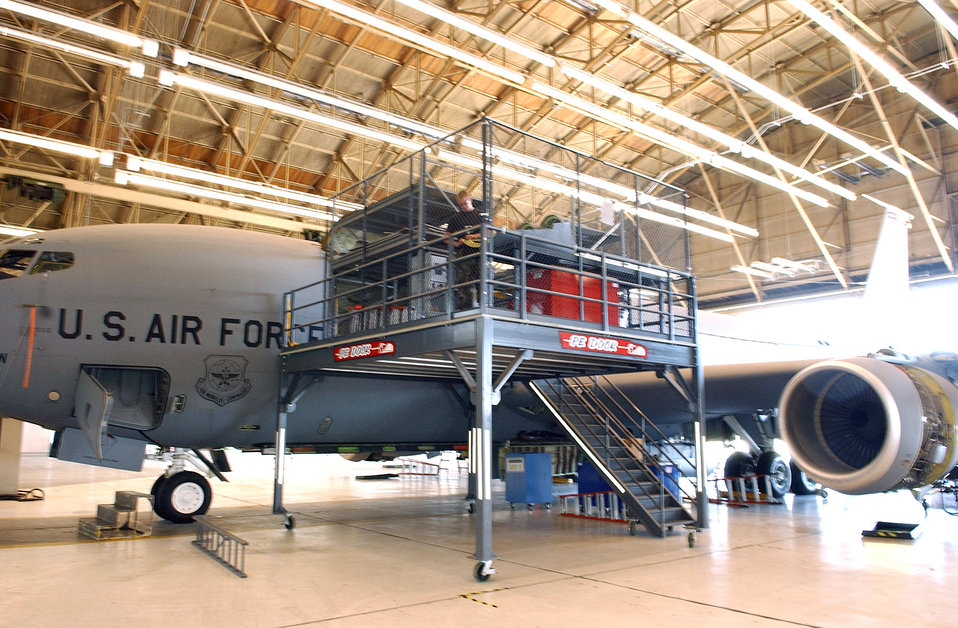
Maintainers improving system through AFSO 21

Staff Sgt. Chris Moore inspects a refueling boom fairing using the cargo door platform work station, an Air Force Smart Operations 21 initiative, at Fairchild Air Force Base, Wash., Sept. 12. Sergeant Moore is a floor supervisor with the 92nd Maintenance Squadron's Periodic Inspection Element.